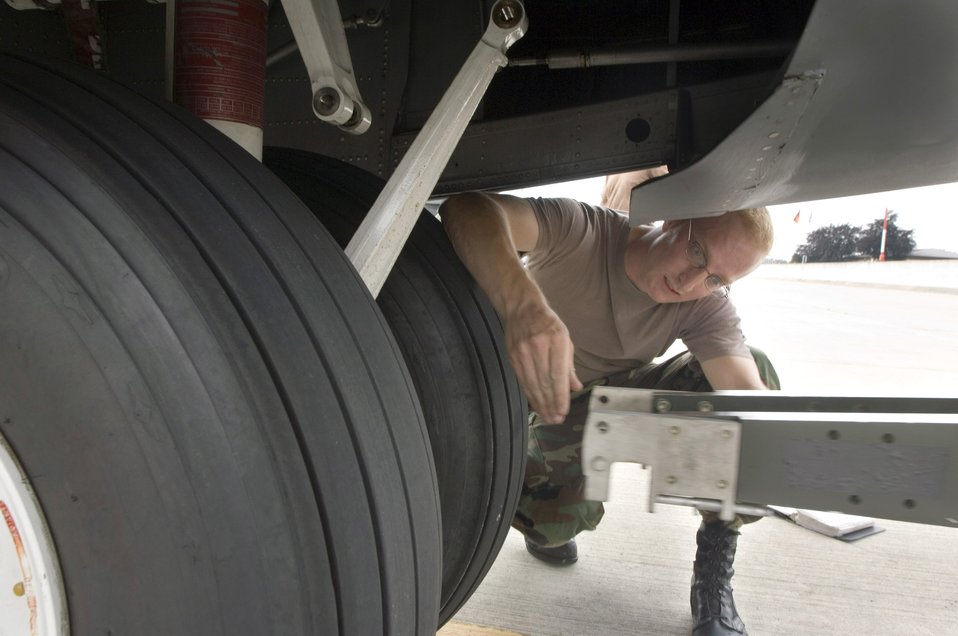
In tow

Senior Airman Chris Sanders disconnects the tow hitch from a C-130 Hercules on Thursday, July 13, at Ramstein Air Base, Germany. Airman Sanders is a crew chief on temporary duty for six weeks with the Ohio Air National Guard's 179th Airlift Wing from Mansfield, Ohio. The C-130 unit is flying sorties throughout Europe, Asia and Africa while at Ramstein.